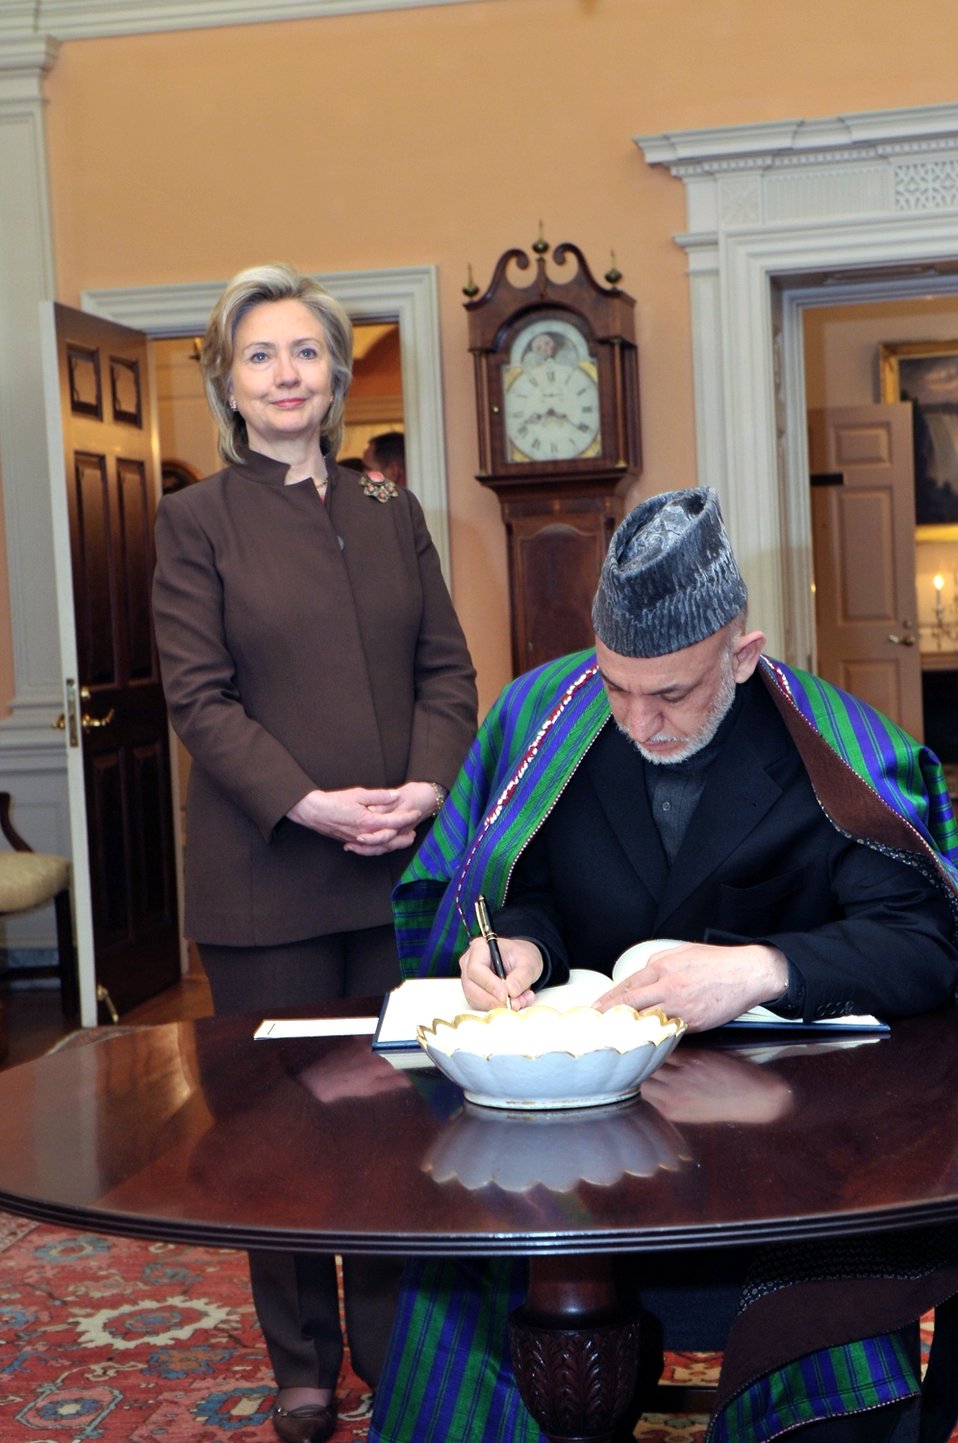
Secretary Clinton Hosts Bilateral Meeting With Afghan President Karzai

U.S. Secretary of State Hillary Rodham Clinton speaks with President of the Islamic Republic of Afghanistan Hamid Karzai during their bilateral meeting in the Ben Franklin Room at the U.S. Department of State, Washington, D.C., May 11, 2010.